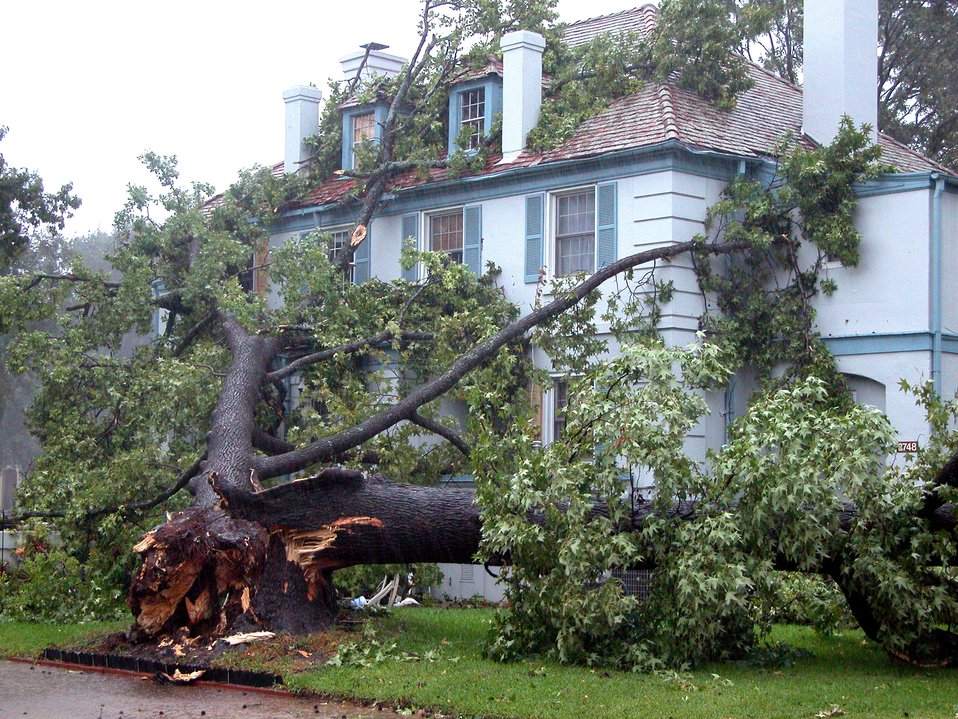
Downed trees damage historic homes

BARKSDALE AIR FORCE BASE, La., -- A historic on-base home was damaged Sept. 24 by a tree downed by Hurricane Rita. .